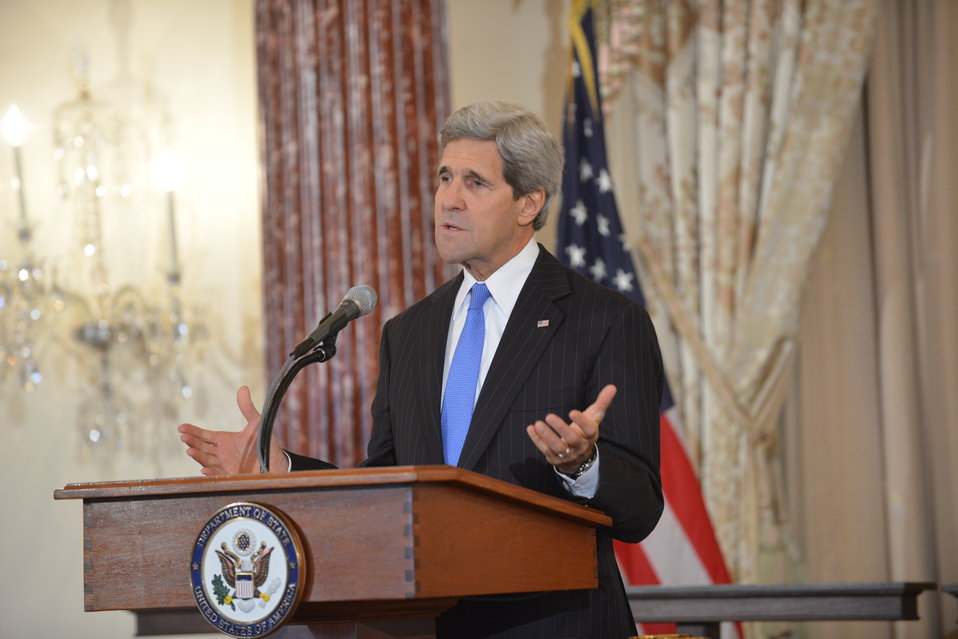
Secretary Kerry Delivers Remarks at the Launch of the Office of Faith-Based Community Initiatives

U.S. Secretary of State John Kerry delivers remarks at the launch of the Office for Engagement With Faith-Based Communities at the U.S. Department of State in Washington, D.C., on August 7, 2013.